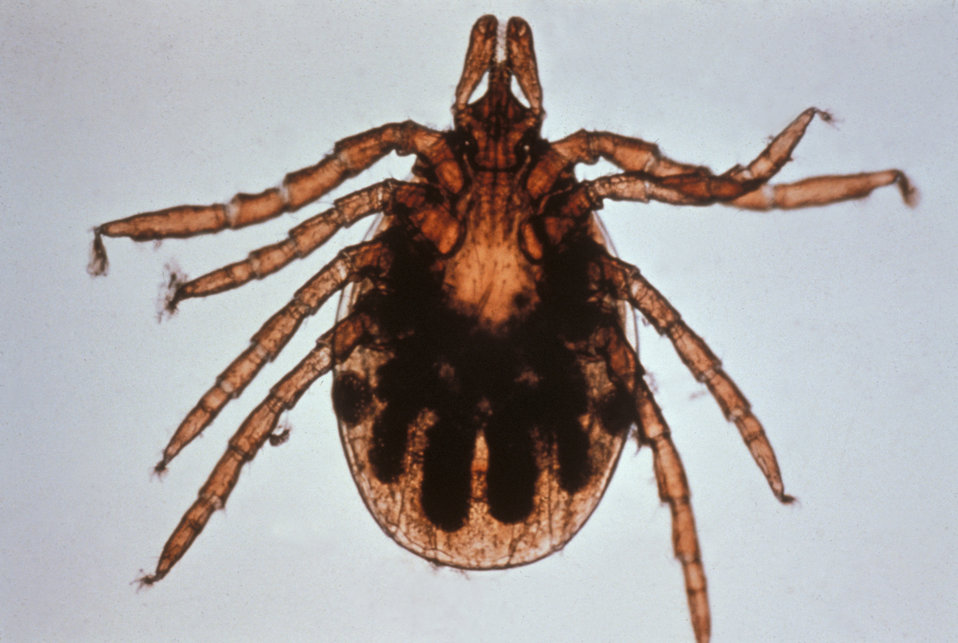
This is a tick of the genus Ixodes in the nymphal stage of its life cycle.